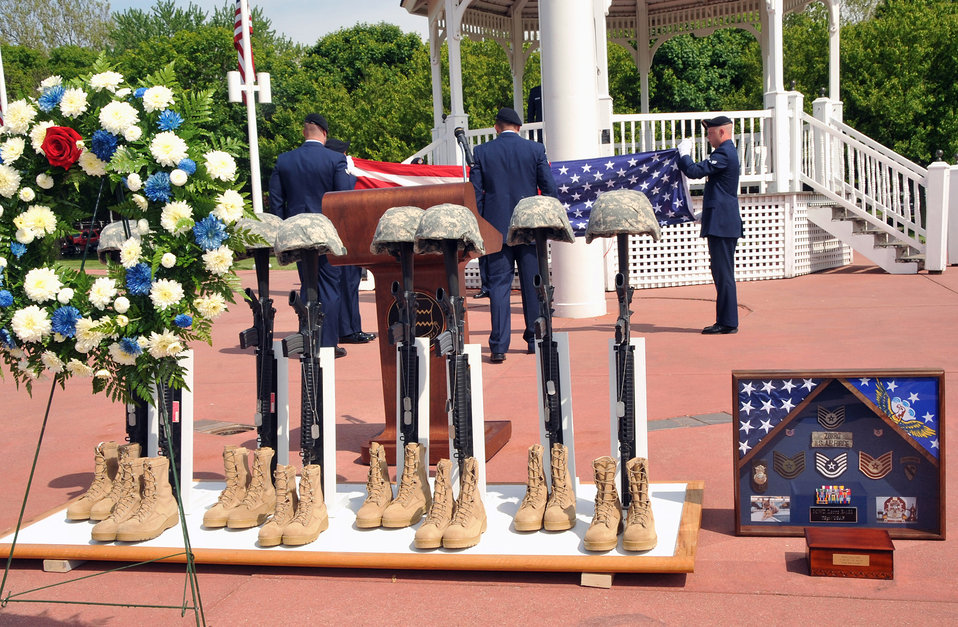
Airmen honor the fallen

Members of the 55th Security Forces Squadron fold the American flag during the base's Police Week Retreat Ceremony at the parade grounds May 14, 2010, at Offutt Air Force Base, Neb. The event honored eight security forces Airmen who died supporting Operation Iraqi Freedom, as well as Zorro, a military working dog.